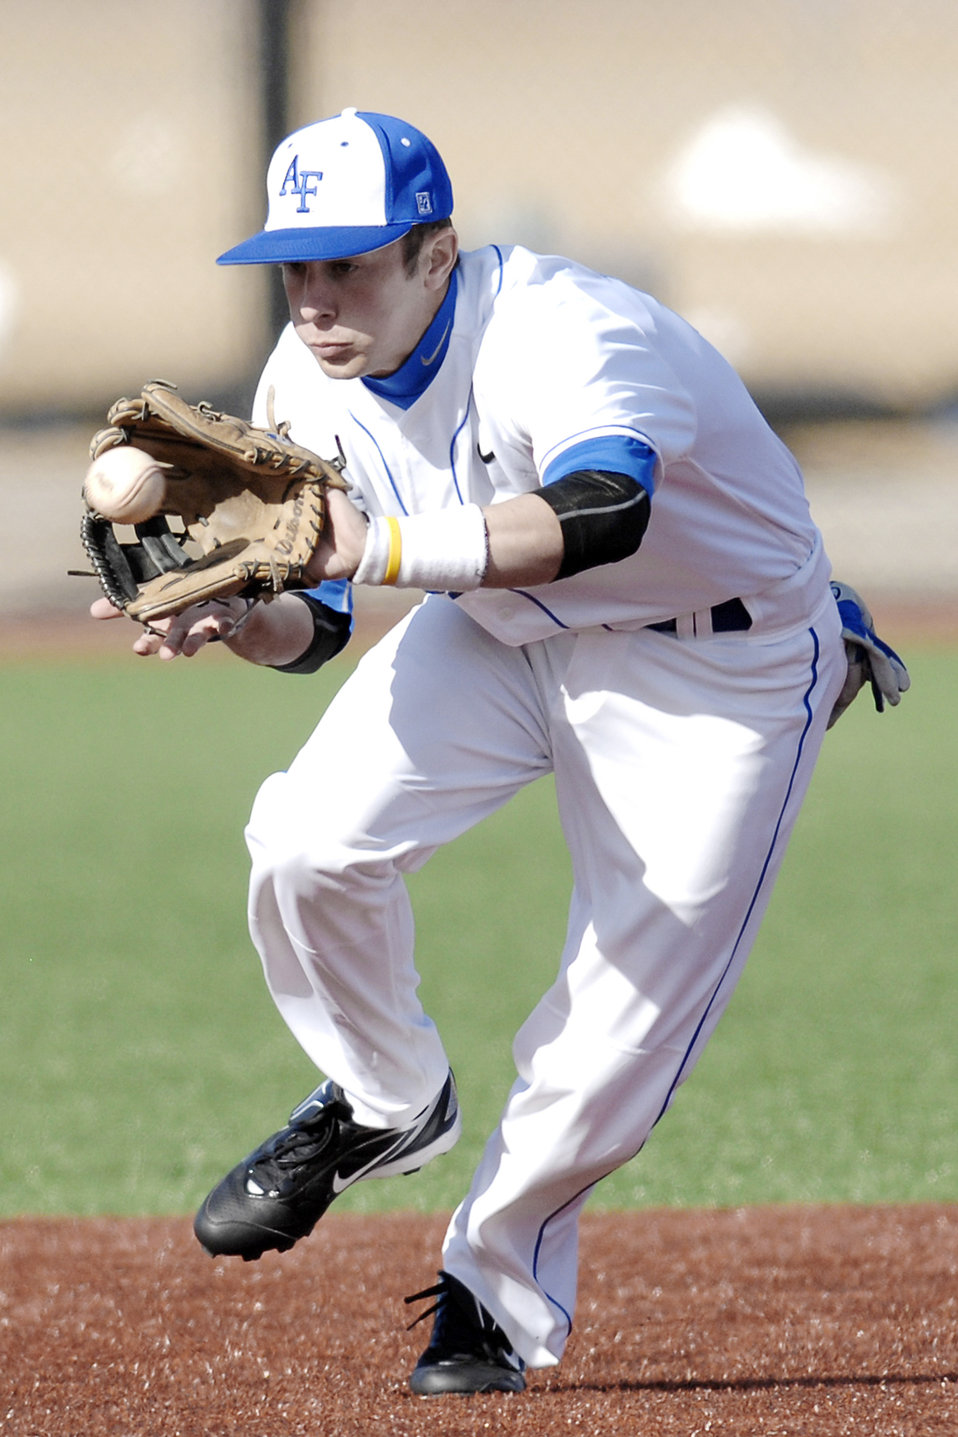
Falcons win baseball home opener

Falcon freshman shortstop Matthew Roberts fields a grounder as the Air Force baseball team racked up a 15-5 victory over Colorado Christian in its home-opener at the Academy's Falcon Field March 2, 2010. Roberts went 3-for-4 with two runs scored. The win improved the Falcons to 2-6 and dropped the Cougars to 6-9.